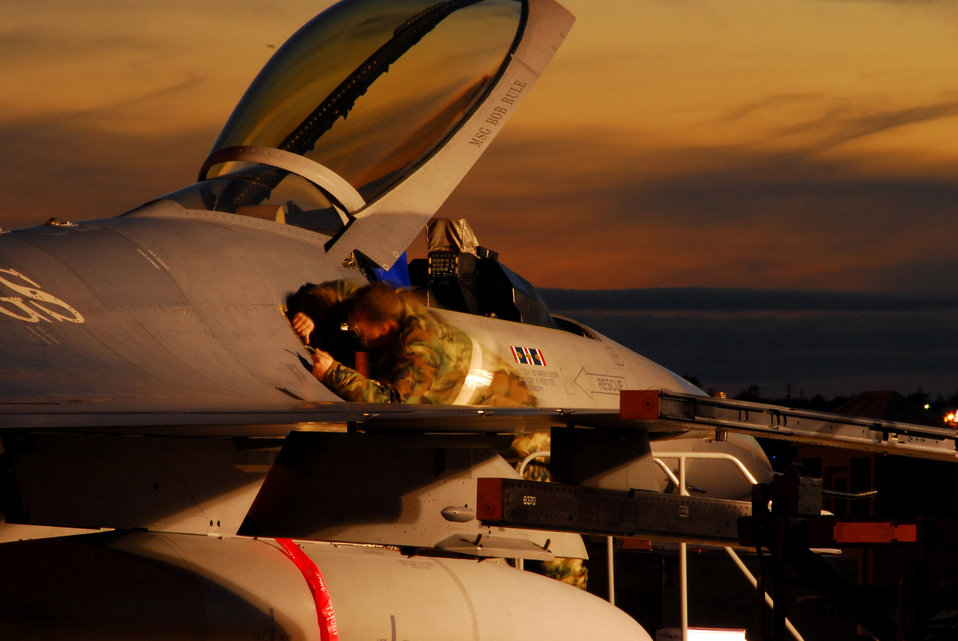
Sun sets on Minnesota Falcons

A 148th Fighter Wing Airman makes repairs to an F-16 Fighting Falcon during an Operational Readiness Inspection Oct. 13 at the Minnesota Air National Guard Base located in Duluth, Minn. The ORI is designed to evaluate the wing's ability to prepare and deploy servicemembers, equipment and support assets to a combat environment.